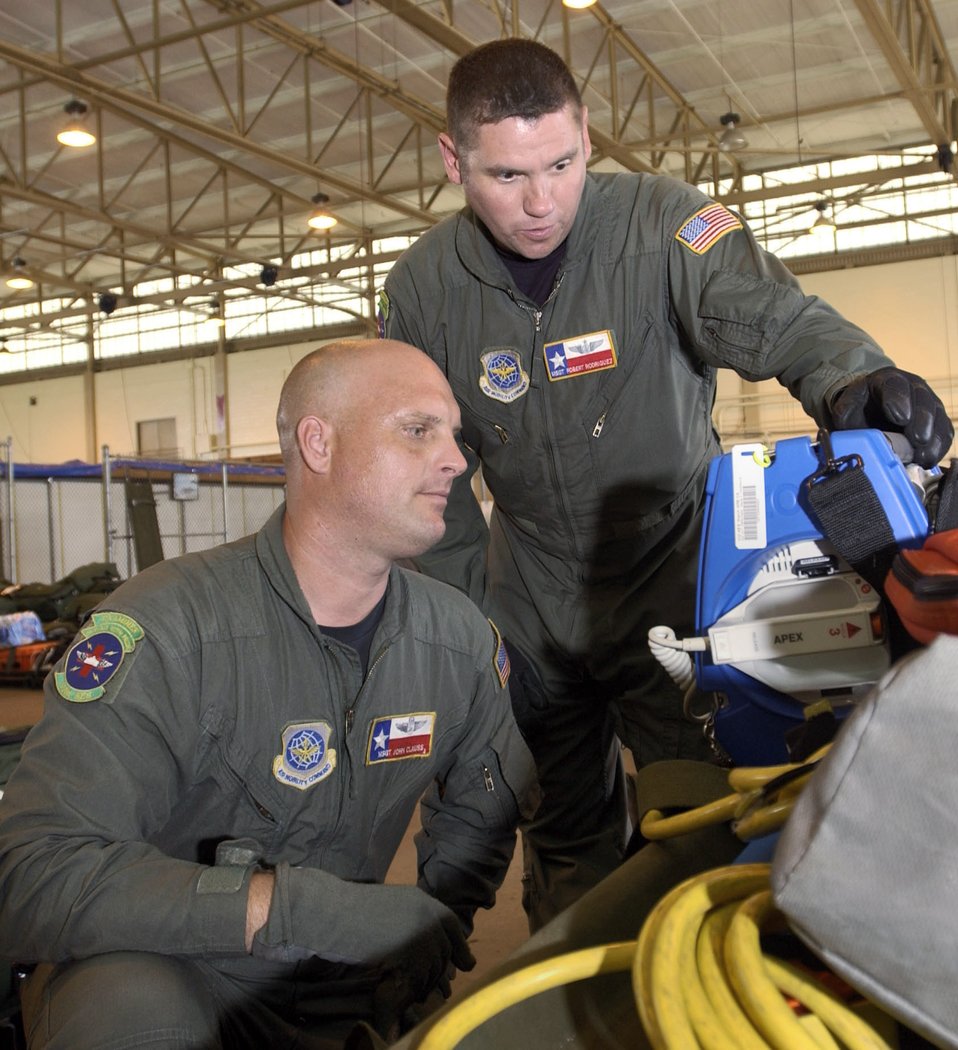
433rd Airlift Wing Airmen learn from Katrina

Master Sgts. John Clauss (left) and Rob Rodriguez perform an operational check-up on a defibrillator Sept. 5, 2005. The two flying medics helped aeromedical evacuation teams organize and load their equipment for flights to New Orleans to help evacuate victims of Hurricane Katrina. They are with the 433rd Airlift Wing at Lackland Air Force Base, Texas.